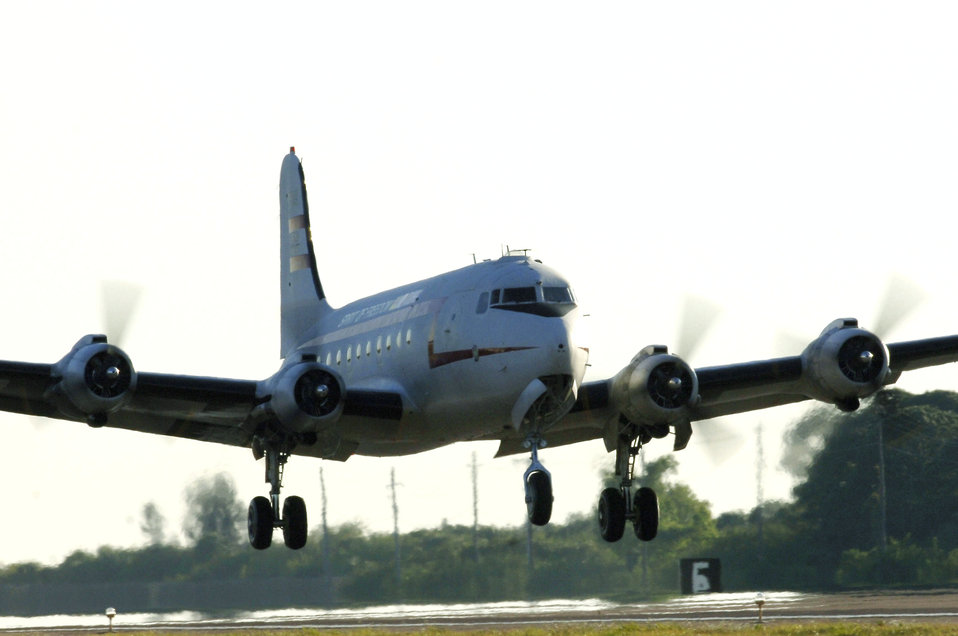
Phoenix Rally celebrates 60th Anniversary of Berlin Airlift

Retired Col. Gail Halvorsen and the crew of C-54 Skymaster